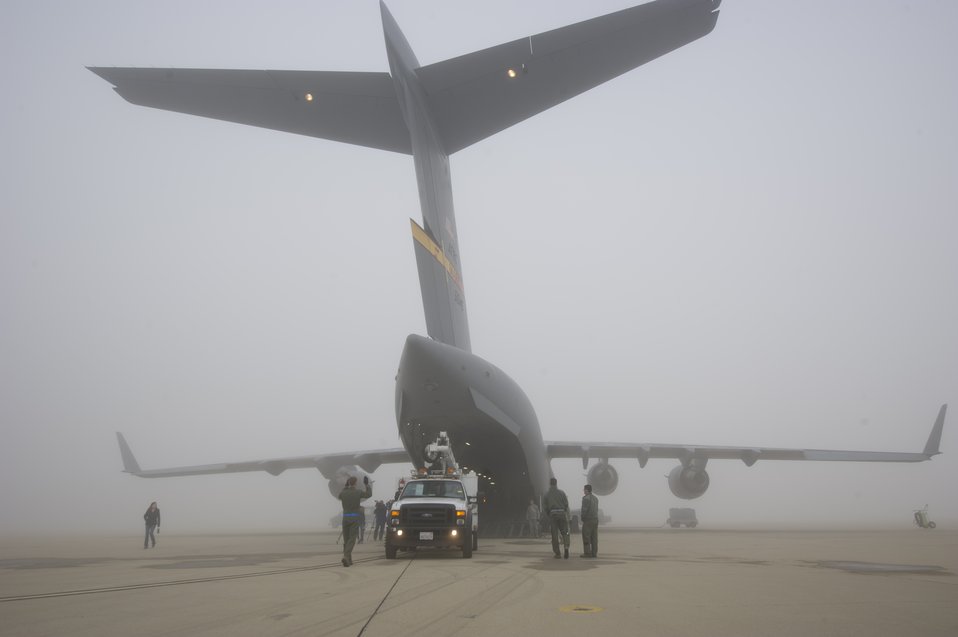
Hurricane relief efforts

Air Force loadmasters assigned to the 729th Airlift Squadron at March Air Reserve Base, Calif., load Southern California Edison Utility Vehicles onto a C-17 Globemaster III in response to the president's call to 'lean forward' with Hurricane Sandy relief efforts Nov. 1, 2012. Military bases across the nation are mobilizing to the northeast region of the country to restore electricity and provide humanitarian assistance, as currently more than 2 million people are without power.